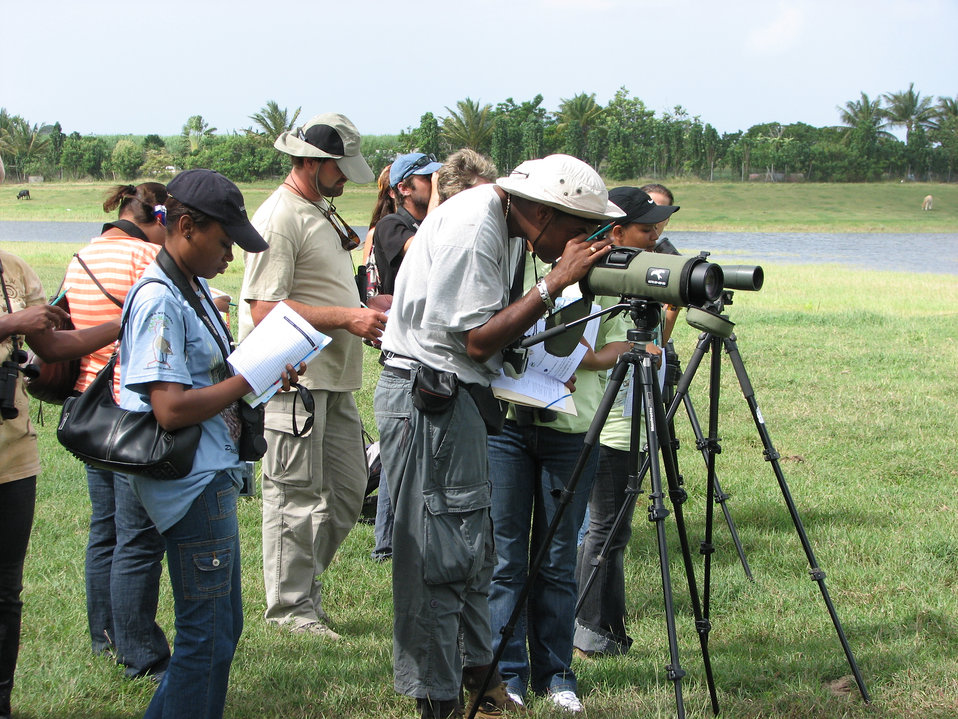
Birding at Gachette Reservoir in the Dominican Republic. Supported by the Neotropical Migratory Bird Conservation Act.